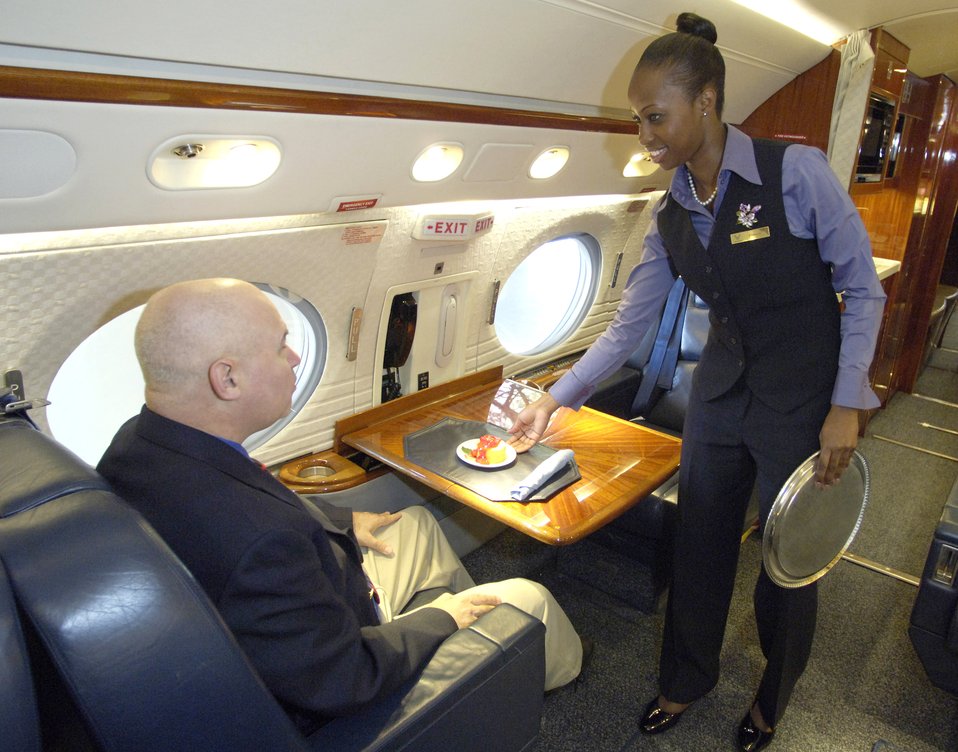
Flight attendants provide world-class service

Staff Sgt. Danyoi Brown serves a dessert course Oct. 31 she prepared in the galley of a C-37A aircraft. Sergeant Brown is a special air mission flight attendant with the 89th Airlift Wing's 99th Airlift Squadron, Andrews Air Force Base, Md. Though they prepare and serve food and beverages, the top priority of Air Force flight attendants are to ensure the safety of passengers and other crew members on board their aircraft.